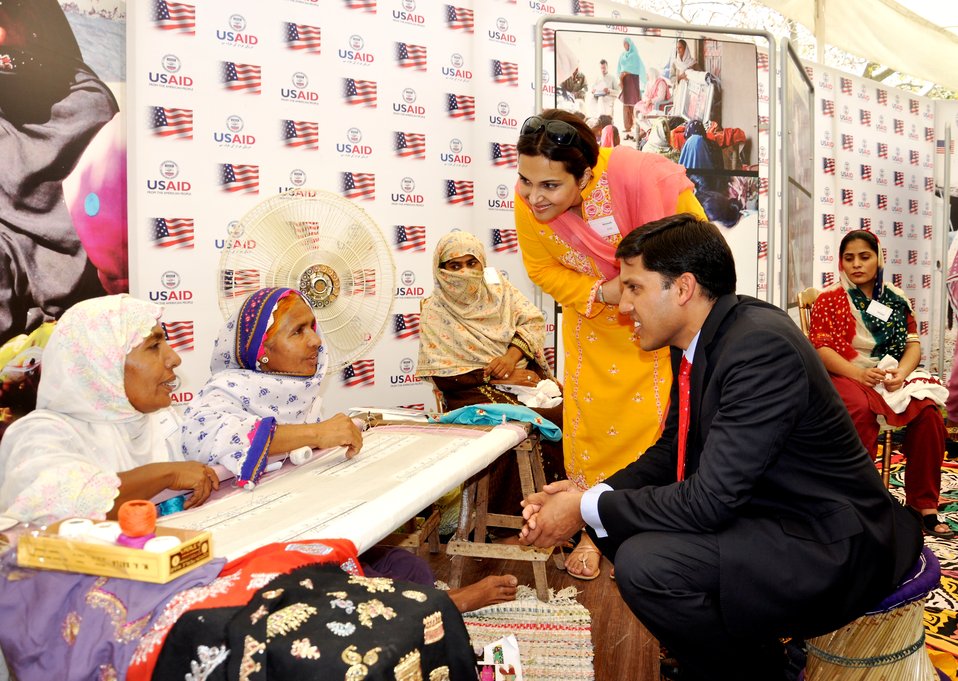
Dr. Rajiv Shah visiting Entrepreneurs project stalls